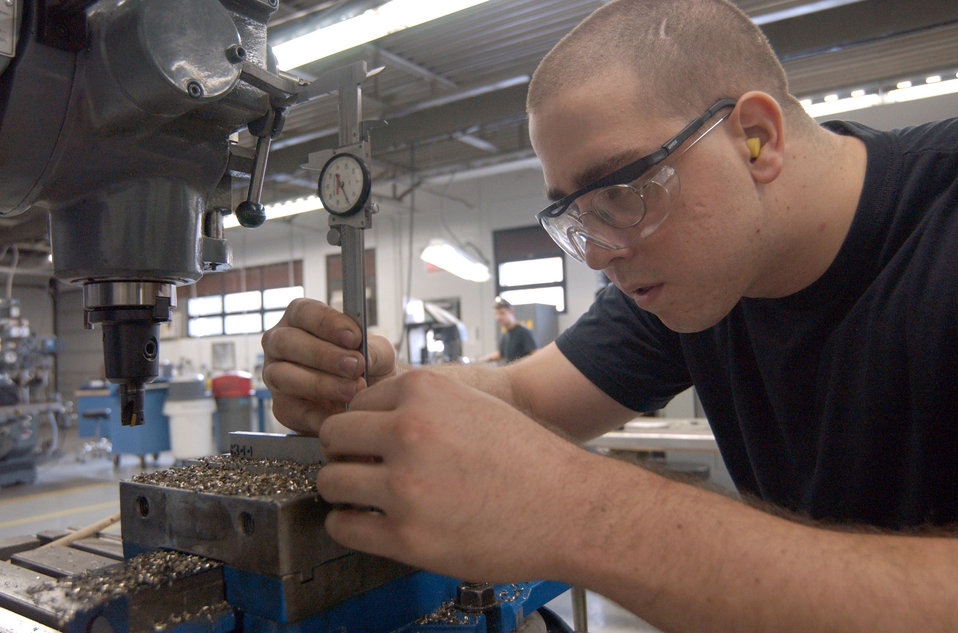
The pin is mightier ...

SHAW AIR FORCE BASE, S.C. -- Senior Airman Christopher Menapace work with a